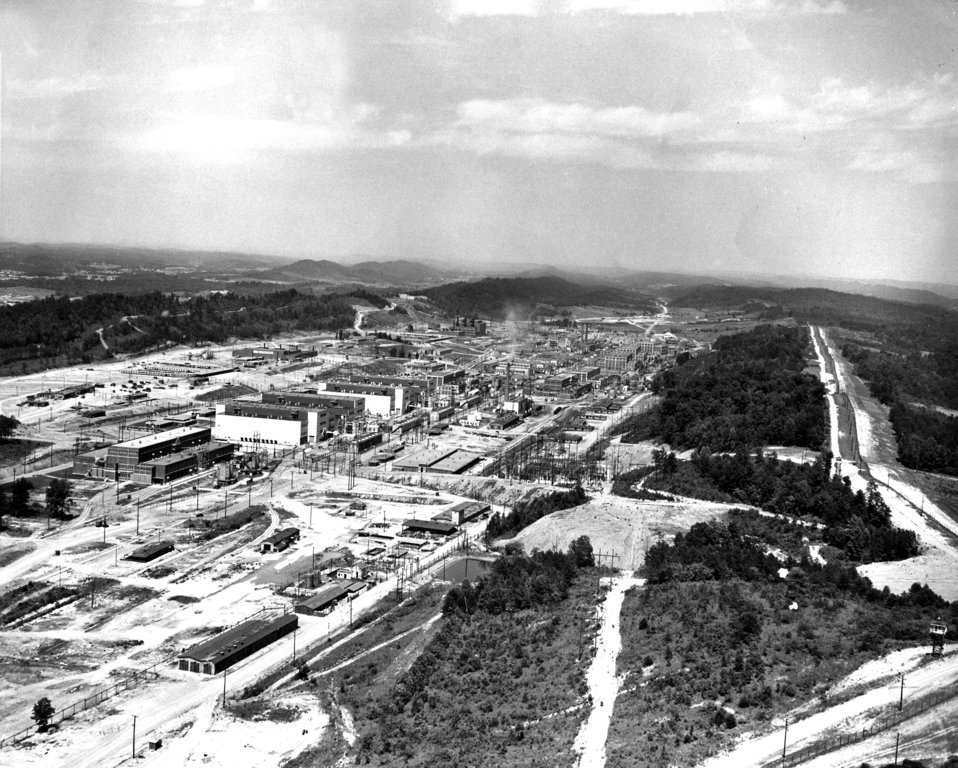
Y-12 Aerial View Oak Ridge 1947

3507 DOE photo Ed Westcott 1947 Oak Ridge Tennessee